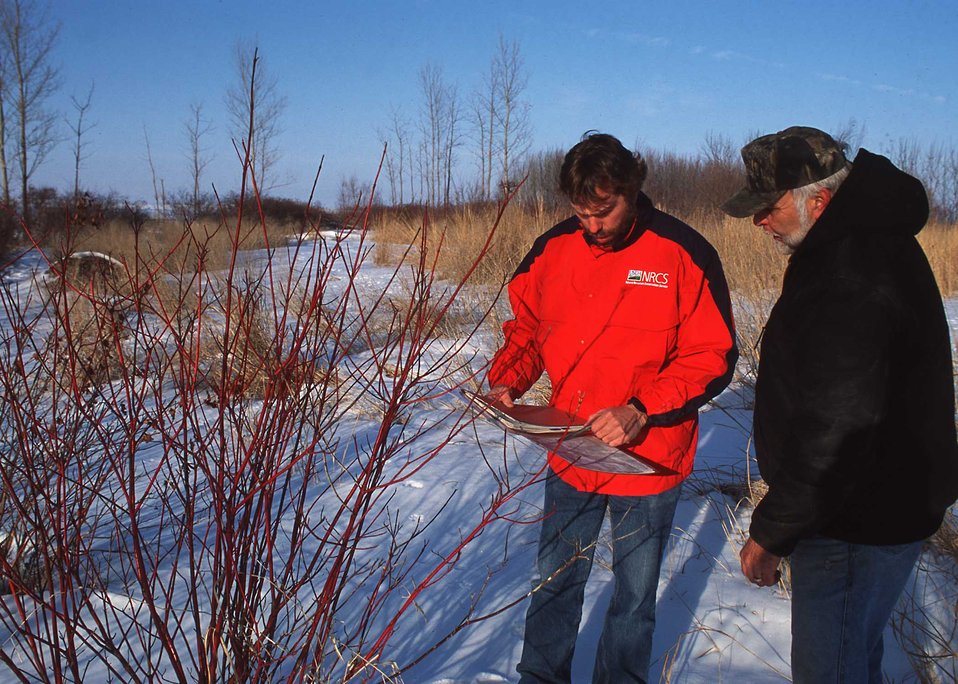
An NRCS District Conservationist discusses wildlife plantings in a conservation buffer along Bear Creek in Story County with an interested landowner.